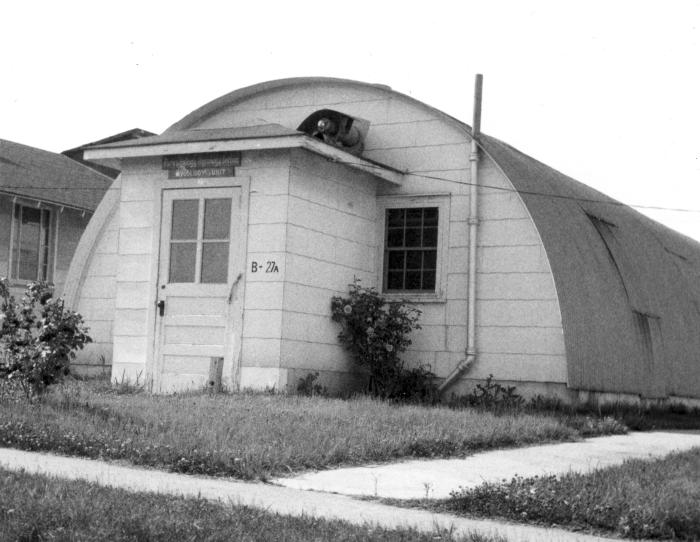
This historic image depicted the Center for Disease Control's (CDC) first Mycology Unit that was started on the organization's Chamblee, Georgia campus in 1947. To date, this Unit has evolved into the current Div. of Bacterial and Mycotic Diseases, Mycotic Diseases Branch, which is a part of the Nat. Center for Infectious Diseases.The spectrum of epidemiologic activities includes investigations of outbreaks, surveillance for trends in invasive fungal infections, determination of risk factors, the development and evaluation of prevention guidelines and intervention strategies. Laboratory activities include collaboration in outbreak investigations and surveillance studies, and applied research aimed at control and prevention of mycotic diseases through application of advancements in mycologic, molecular biologic and immunologic methods.